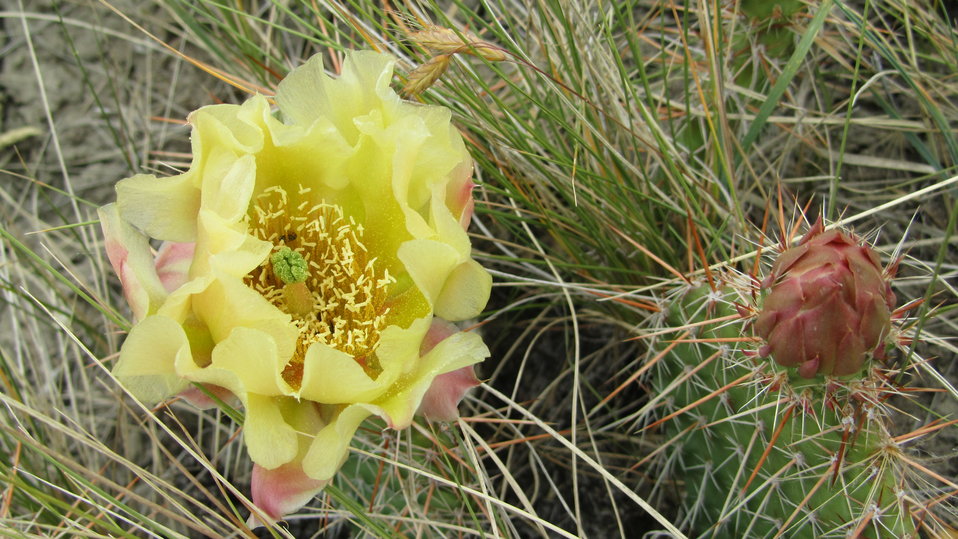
Plains Prickly Pear Cactus

(Opuntia polyacantha)